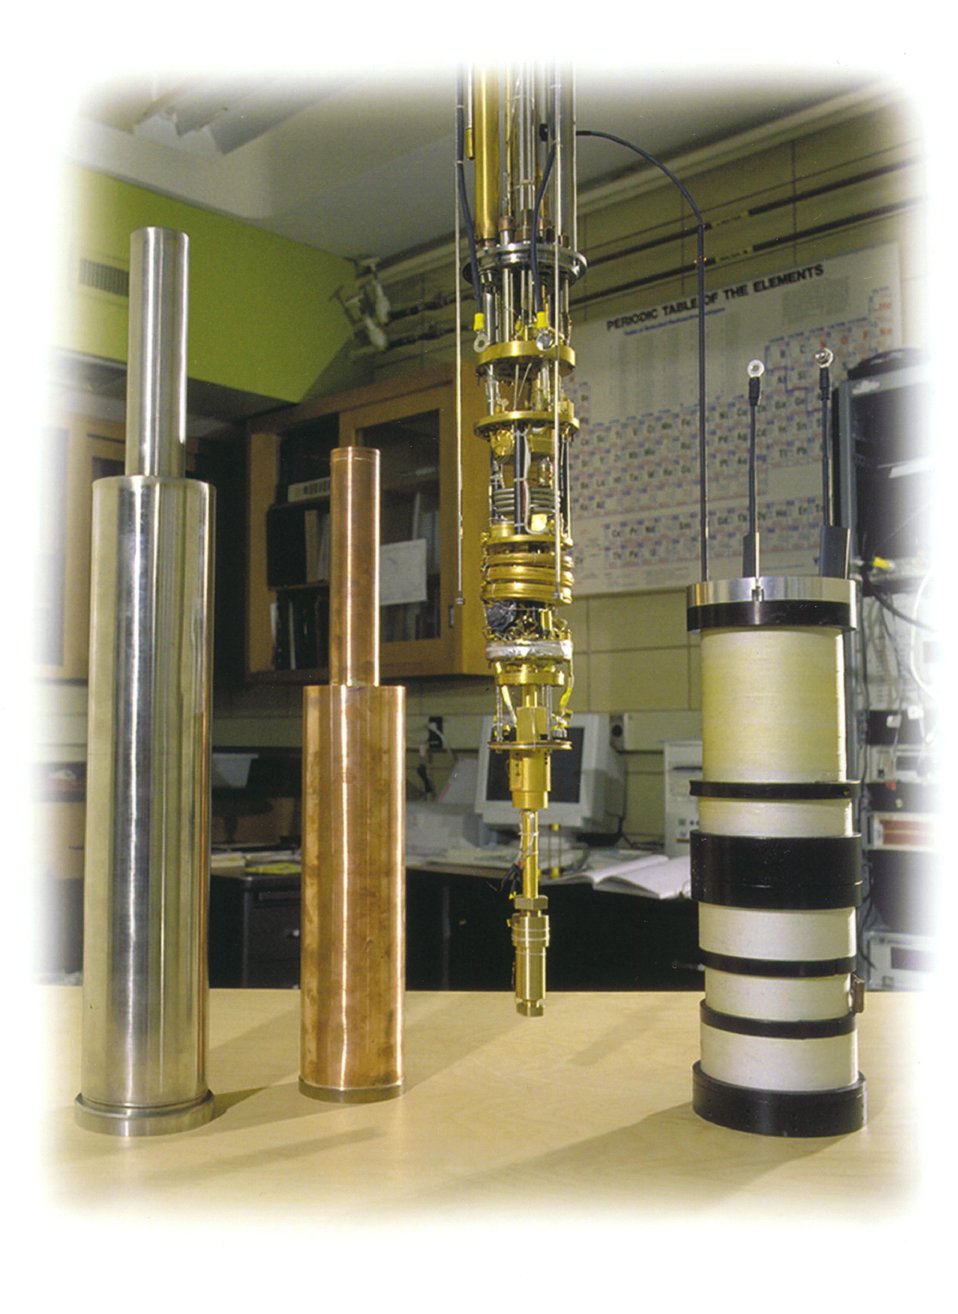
SHOWN HERE ARE COMPONENTS OF AMES LAB'S UNIQUE COMBINED EXTREMES FACILITY.

AMES LAB HAS DEVELOPED A FACILITY TO INVESTIGATE UNUSUAL MATERIALS UNDER SIMULTANEOUS ENVIRONMENTAL EXTREMES OF VERY LOW TEMPERATURE, HIGH PRESSURE AND HIGH MAGNETIC FIELD. THE ESSENTIAL COMPONENTS OF AMES' UNIQUE COMBINED EXTREMES FACILITY ARE (LEFT TO RIGHT): HIGH-VACUUM CAN, HEAT SHIELD, DILUTION CRYOSTAT WITH ATTACHED HIGH-PRESSURE CELL, AND THE SUPERCONDUCTING SOLENOID.